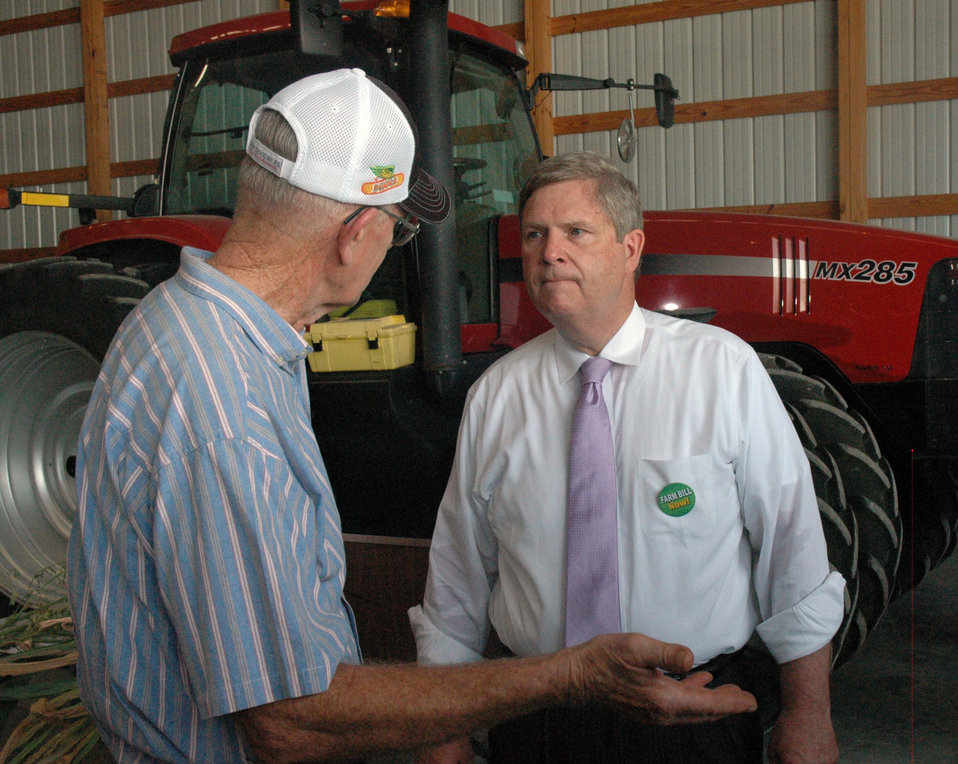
Agriculture Secretary Tom Vilsack met with producers, industry and business leaders in Prairie City, Iowa on Tuesday, July 24, 2012 to discuss the ongoing drought and USDA's efforts to assist producers.

As of July 20, the U.S. Department of Agriculture has designated 1,055 counties across the country as disaster areas due to drought. According to the most recent U.S. Drought Monitor report, 88 percent of our nation's corn and 87 percent of our soybeans are in drought-stricken areas.